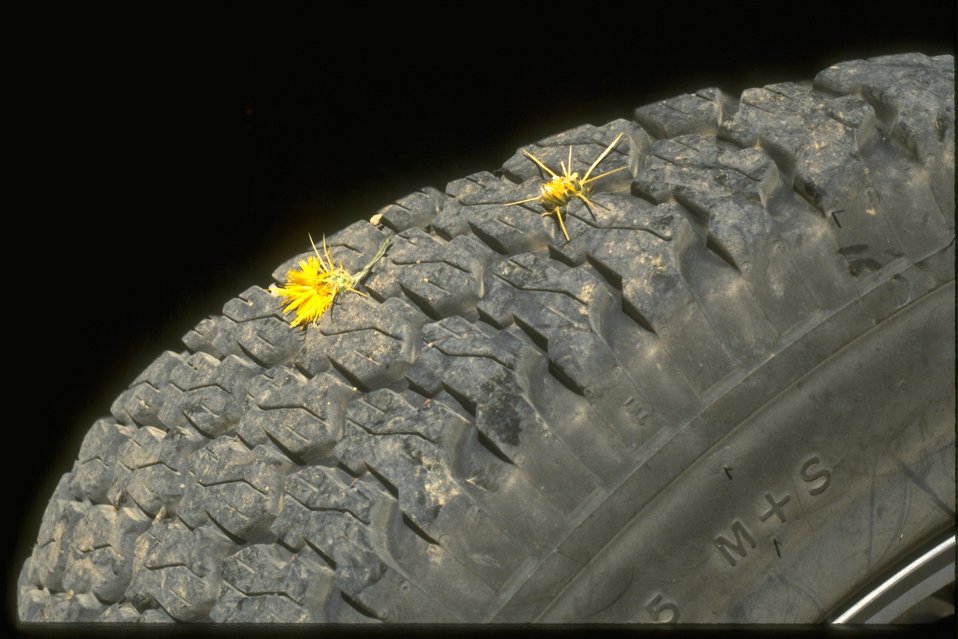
Yellow Starthistle seedhead in tire.